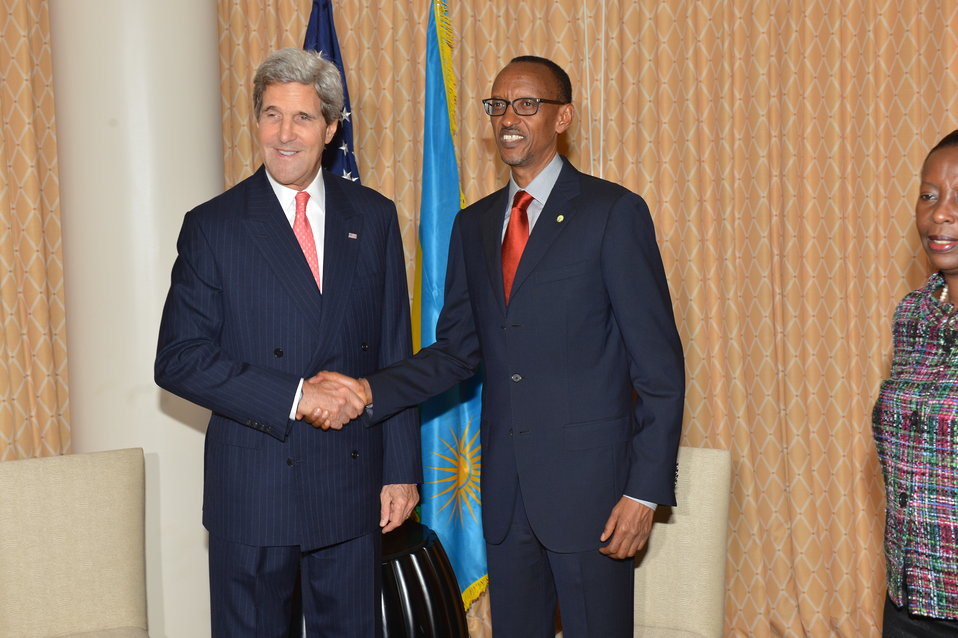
Secretary Kerry Meets With Rwandan President Kagame

U.S. Secretary of State John Kerry meets with Rwandan President Paul Kagame in New York City on September 26, 2013.